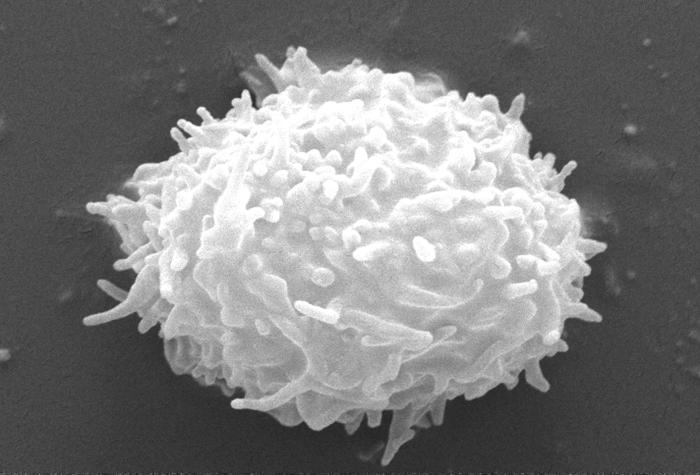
This scanning electron micrograph (SEM) revealed some of the ultrastructural features seen on the surface of an Acanthamoeba polyphaga protozoan. Note the numerous projecting pseudopodia, from the Latin pseudo = false, and podia = feet, which extend from the organism's surface. These enable the amoeba to move about, and grasp objects in its environment.